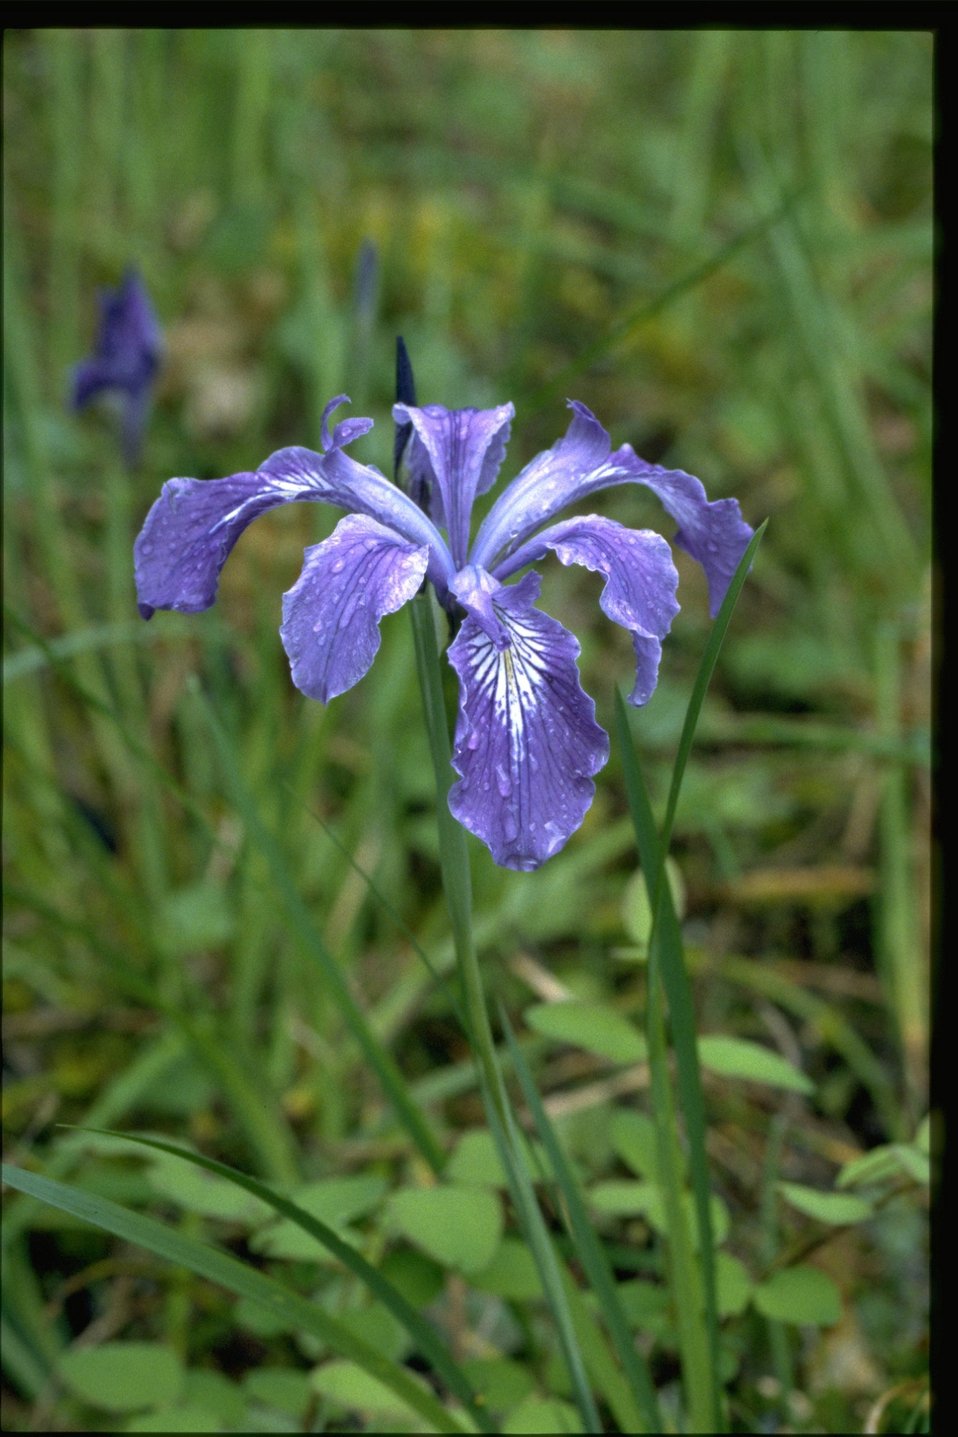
Medium shot of Iris tenax.